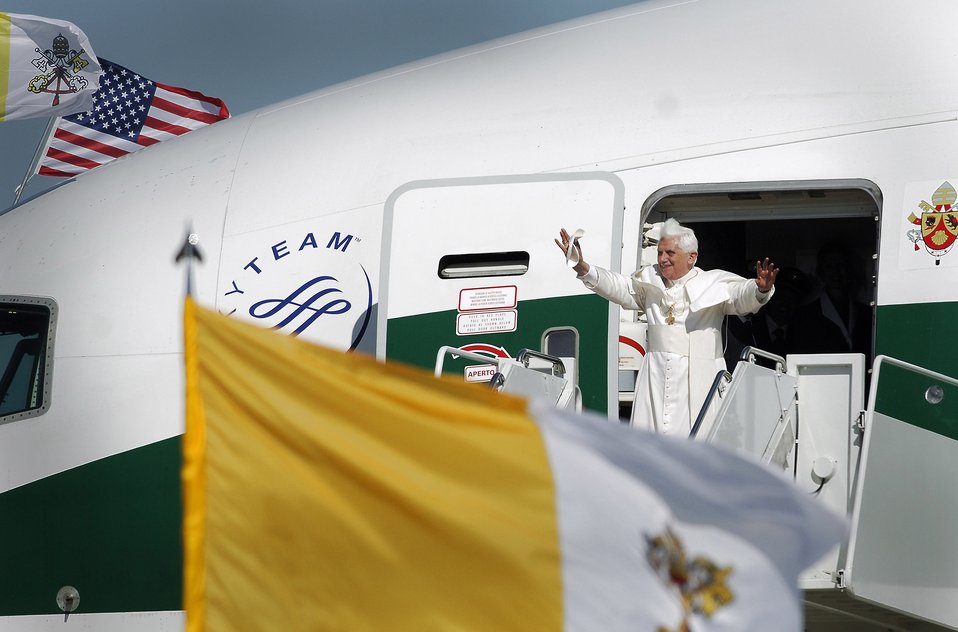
Buon giorno, America!

Beginning his weeklong trip to the United States, Pope Benedict XVI arrives at Andrews Air Force Base, Md. The Pope will meet with President George W. Bush, address the presidents of Roman Catholic Colleges and Universities, and hold Mass in Washington, D.C. and New York City.